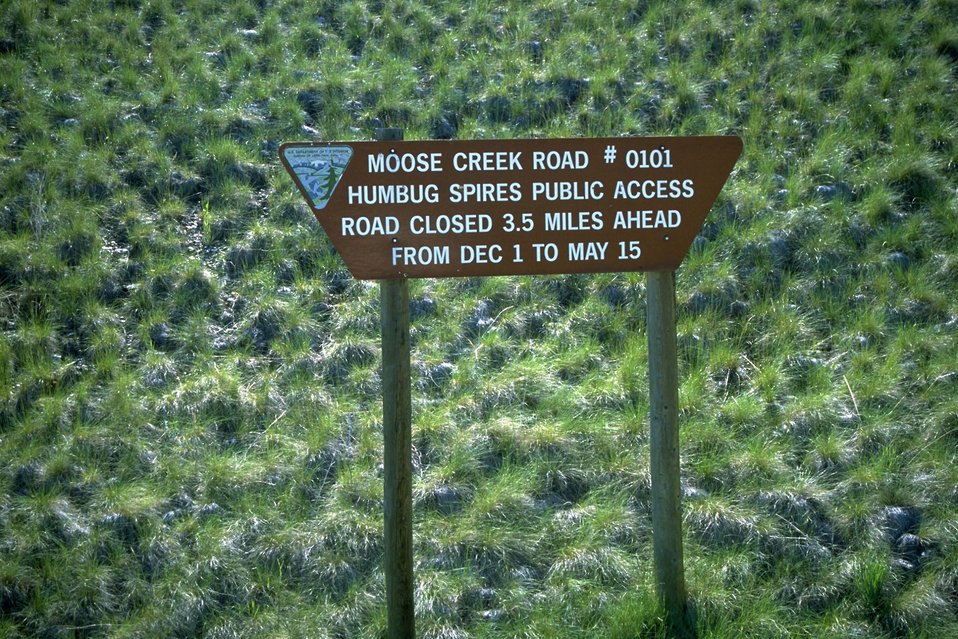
Moose Creek Road sign